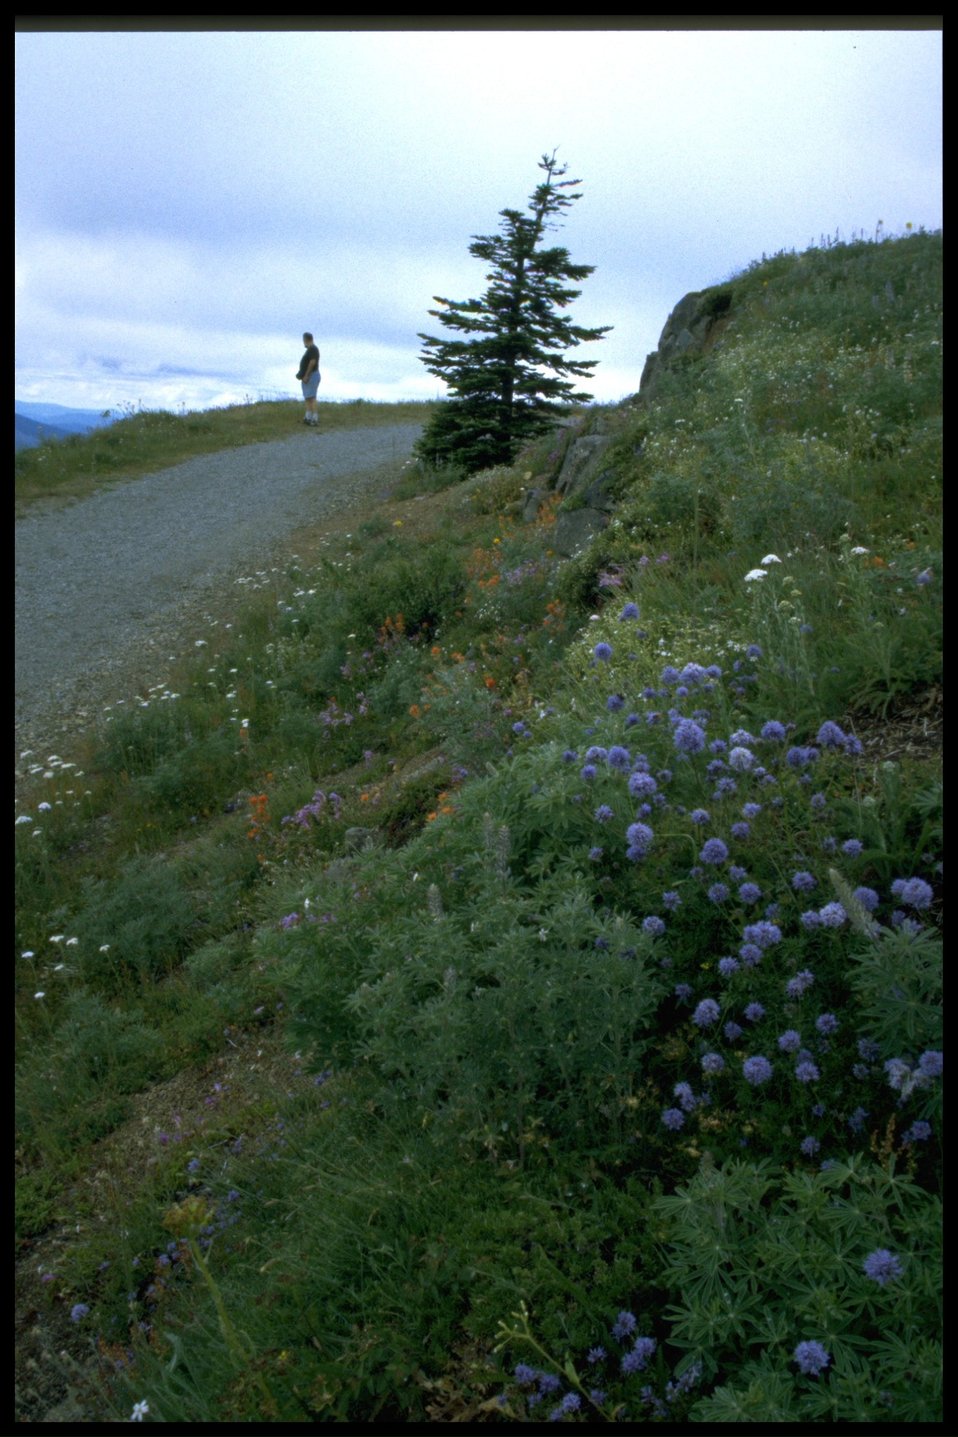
Farshot of blue-field gilia, Gilia capitata.